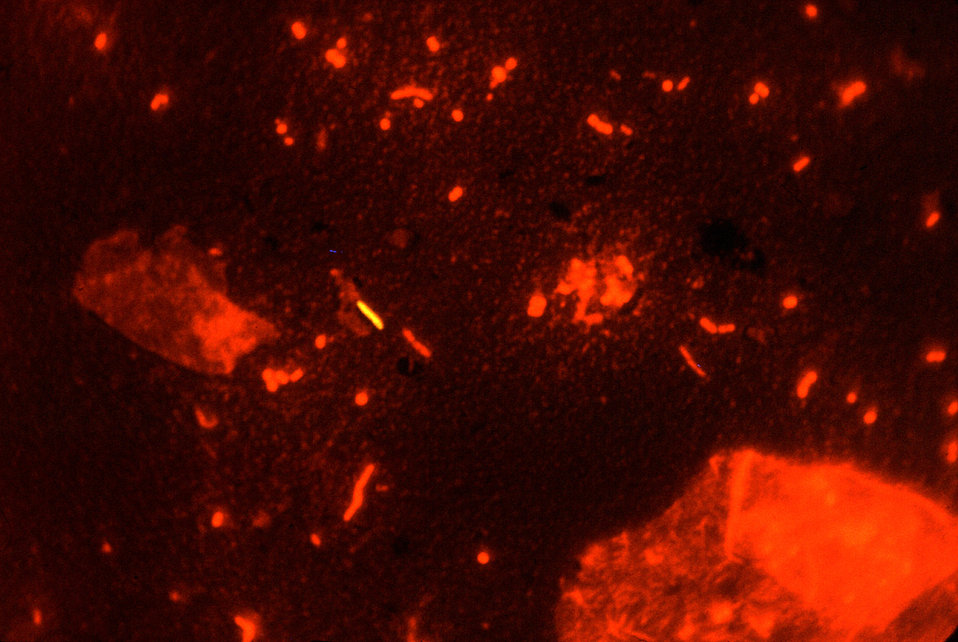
M. tuberculosis in a sputum smear is stained using fluorescent auramine with acridine orange counterstain; Mag.-950x.